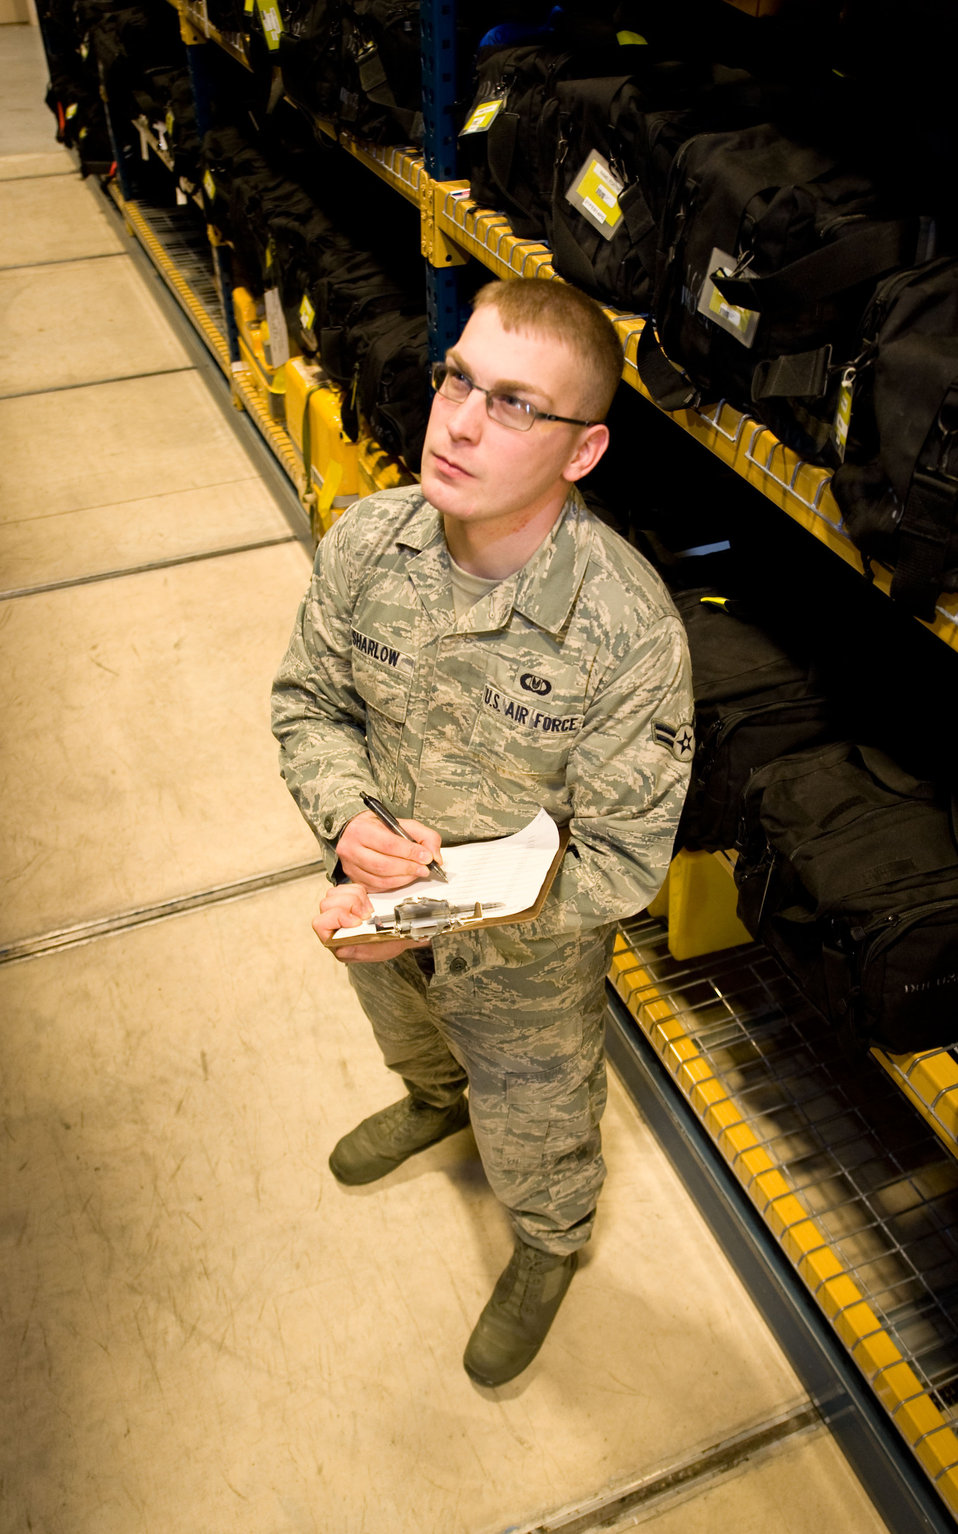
Tracking hits the easy button

Airman 1st Class Chris Sharlow, 436th Operations Support Squadron Aircrew Flight Equipment journeyman, takes an inventory of aircrew flight equipment at Dover Air Force Base, Del., on Nov. 30, 2012. He is the creator of a new computer program used to easily track thousands of accountable aircrew equipment items. Sharlow's program is known as the Flight Equipment Automated Records Systems and is being used to ensure tracking and on-time inspections of items critical to safe, efficient mission accomplishment.